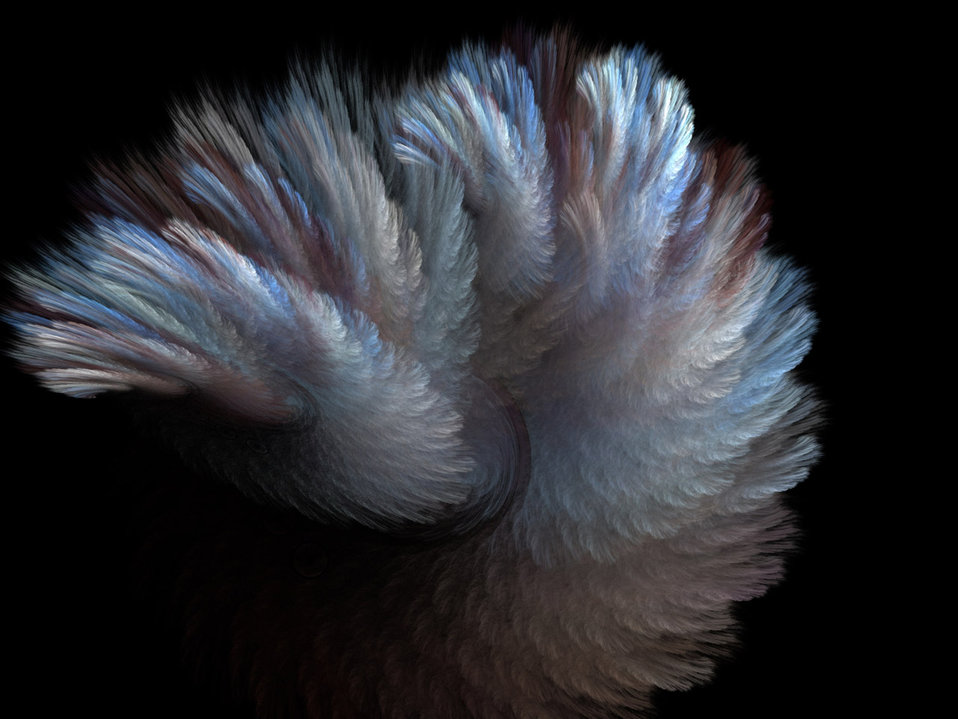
Fur and feather

Fractal in grey and blue.